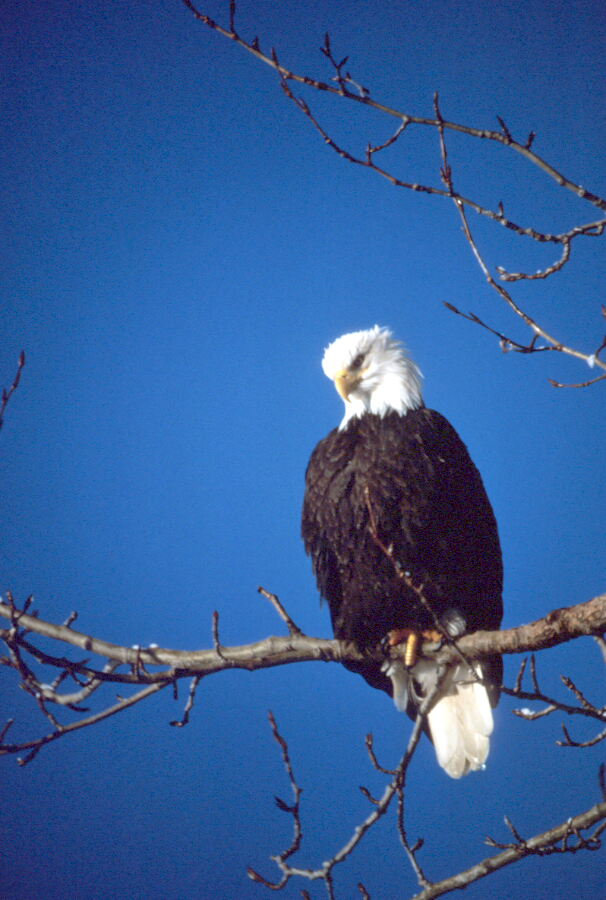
Bald Eagle.